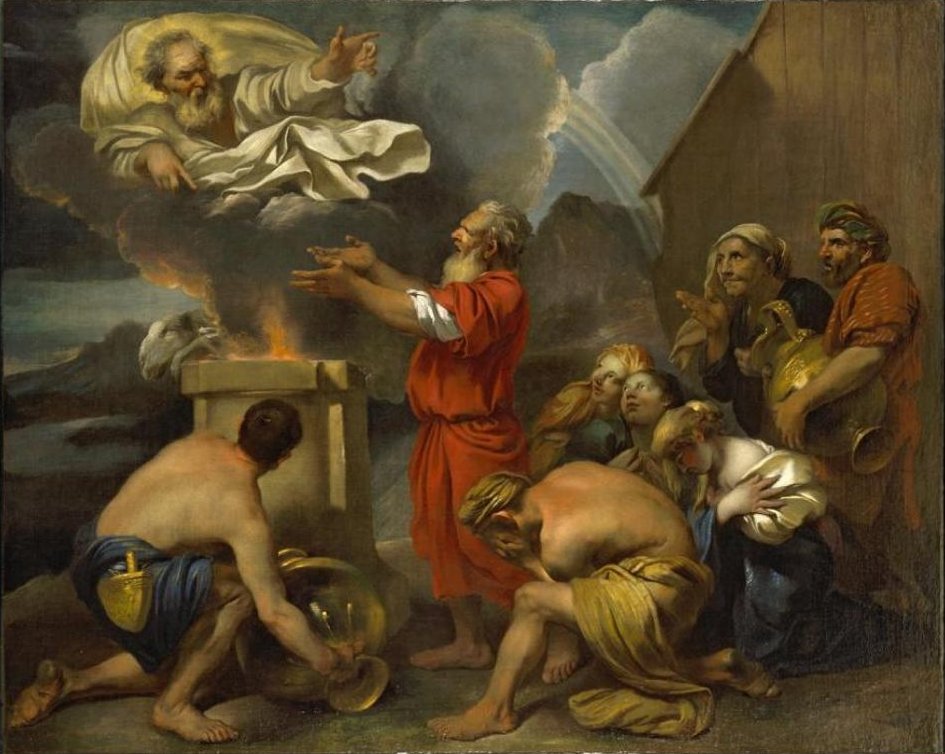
'Noah's Offering', oil on canvas painting attributed to Francesco Castiglione, El Paso Museum of Art